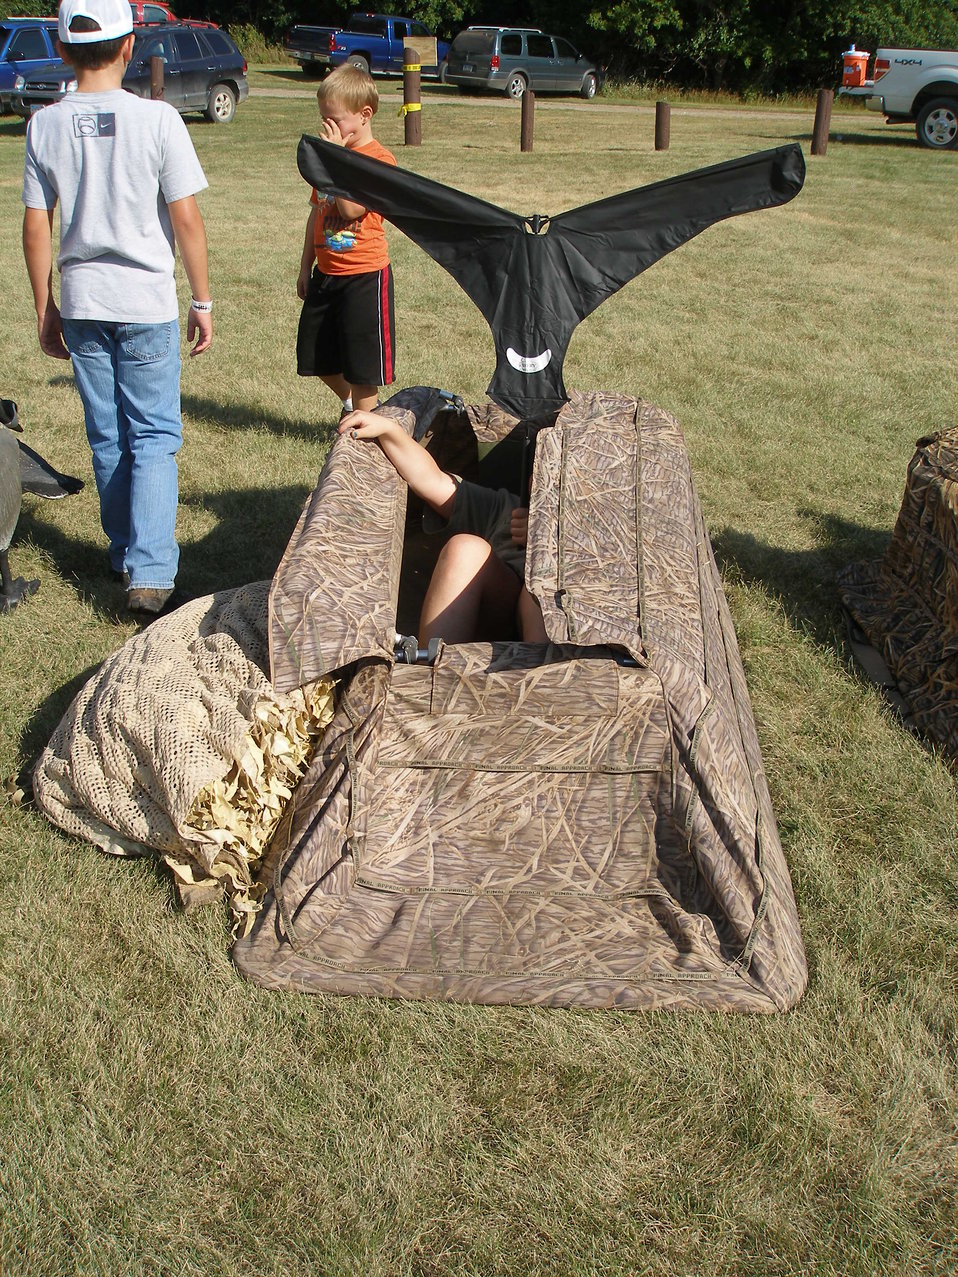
2011 Greenwing Day - Decoy Setup Session

Des Lacs National Wildlife Refuge, Tasker's Coulee

Youth were also able to try out the blinds!